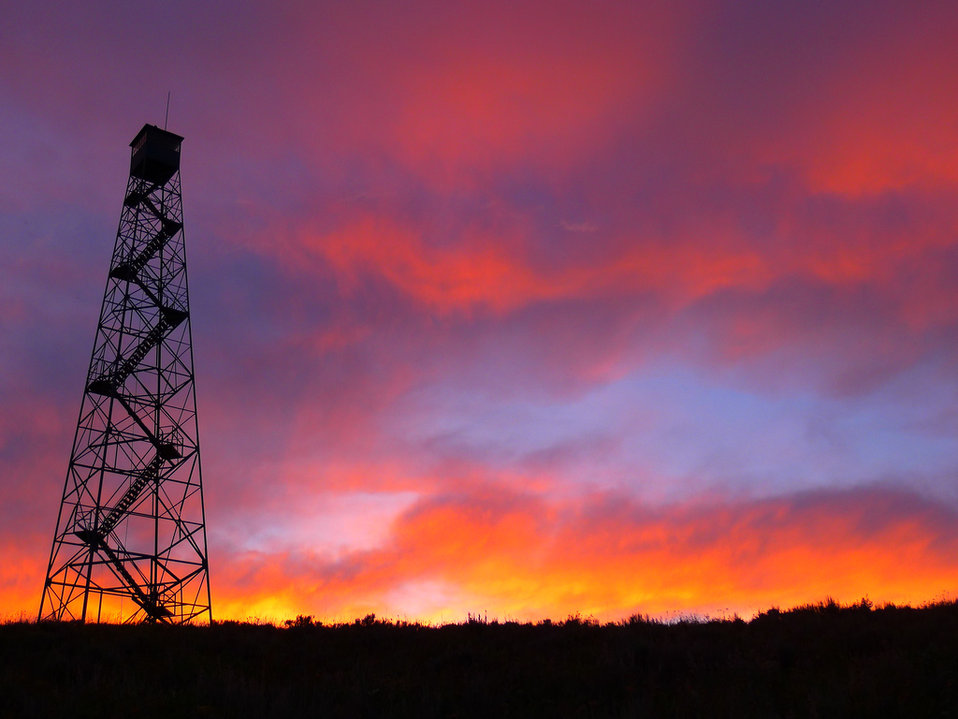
sunset at the fire tower

Red Rock Lakes National Wildlife Refuge, MT
early autumn 2011